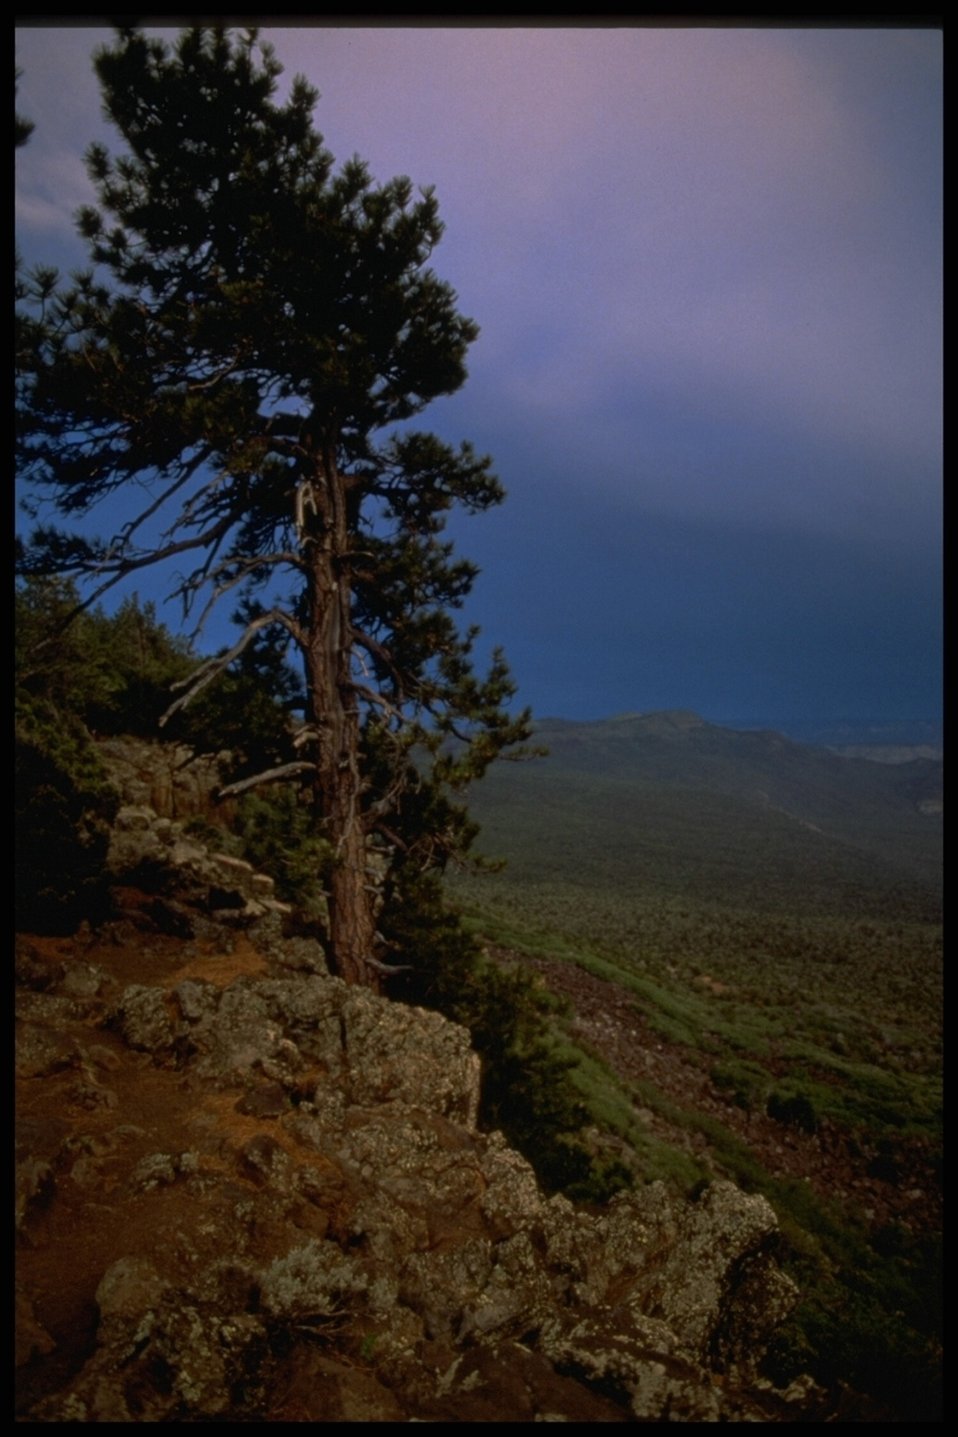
Ominous clouds threaten rain over the Grand Canyon-Parashant National Monument.